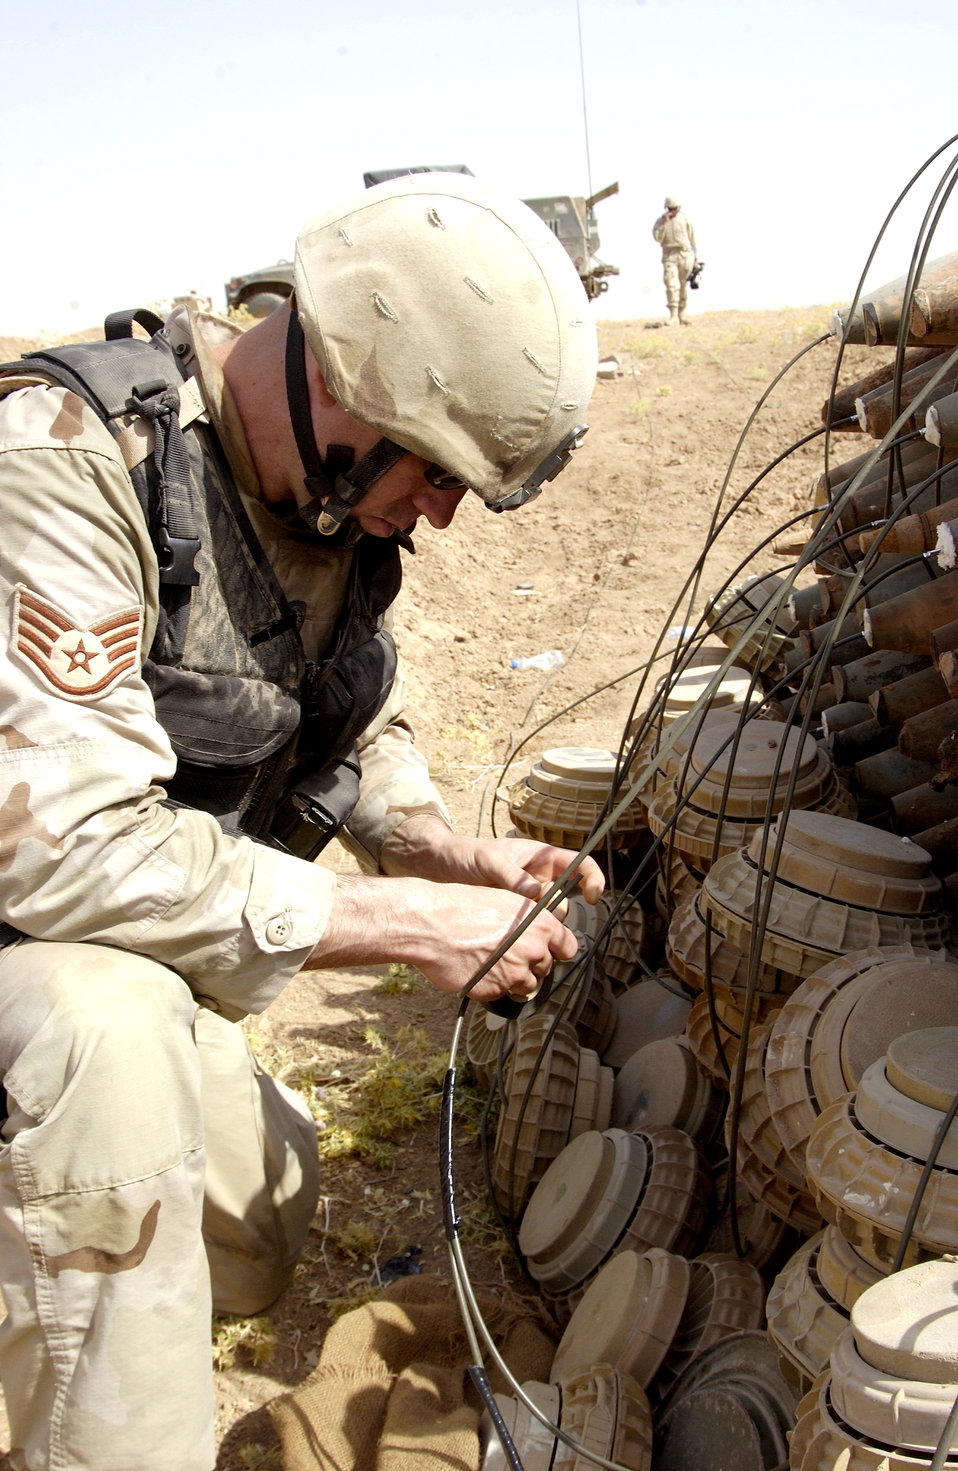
Blasted

KIRKUK AIR BASE, Iraq -- Staff Sgt. Brendan Pouliotte attaches blasting caps to the main detonation cord as part of the demolition of more than 2,500 pounds of seized munitions. Sergeant Pouliiotte is from Fairchild Air Force Base, Wash.